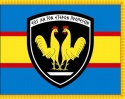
Image of the 12th Mechanised Infantry Division of the Hellenic Army